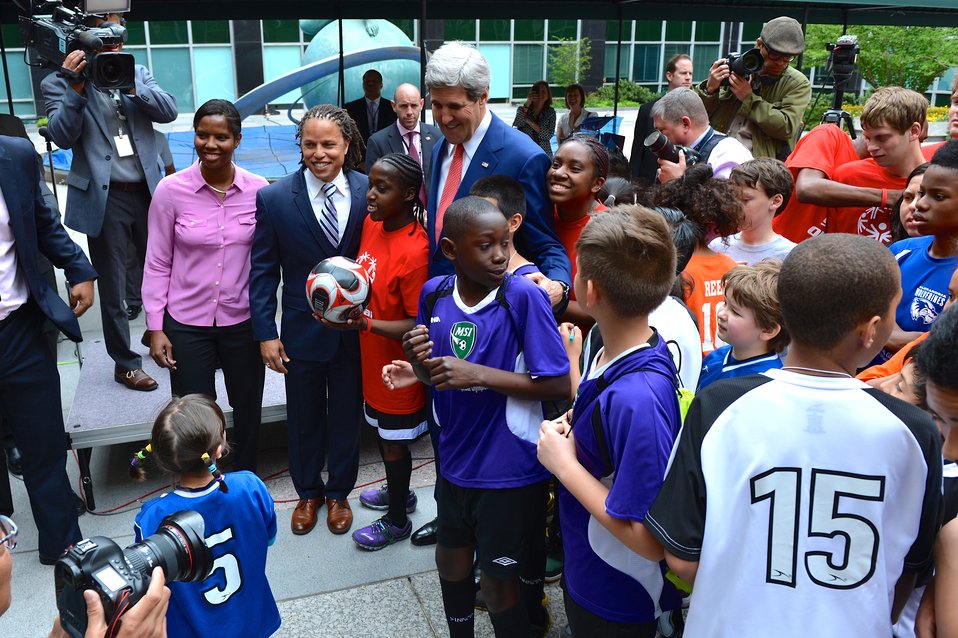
Secretary Kerry With Young Athletes and Sports Envoys Scurry, Jones and Sanneh

U.S. Secretary of State John Kerry poses for a photo with athletes from local youth soccer organizations and Sports Envoys Briana Scurry, Cobi Jones, and Tony Sanneh at the U.S. Department of State in Washington, D.C., on April 14, 2014.